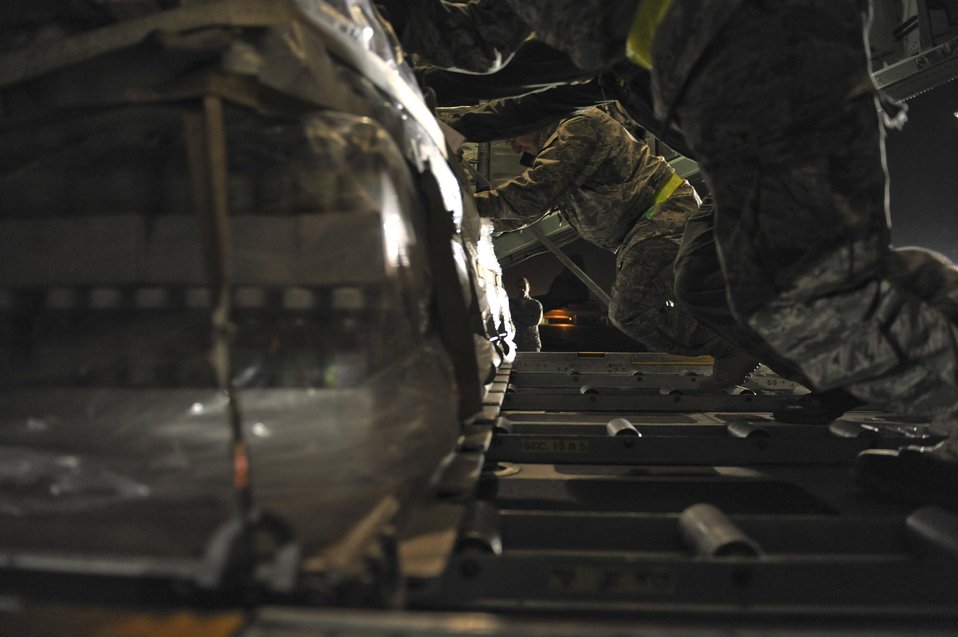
Haiti night mission

Airmen from the Puerto Rico Air National Guard's 156th Airlift Wing load cargo onto a C-130E Hercules aircraft Jan. 16, 2010, to support the relief effort in Haiti in the aftermath of a devastating earthquake.